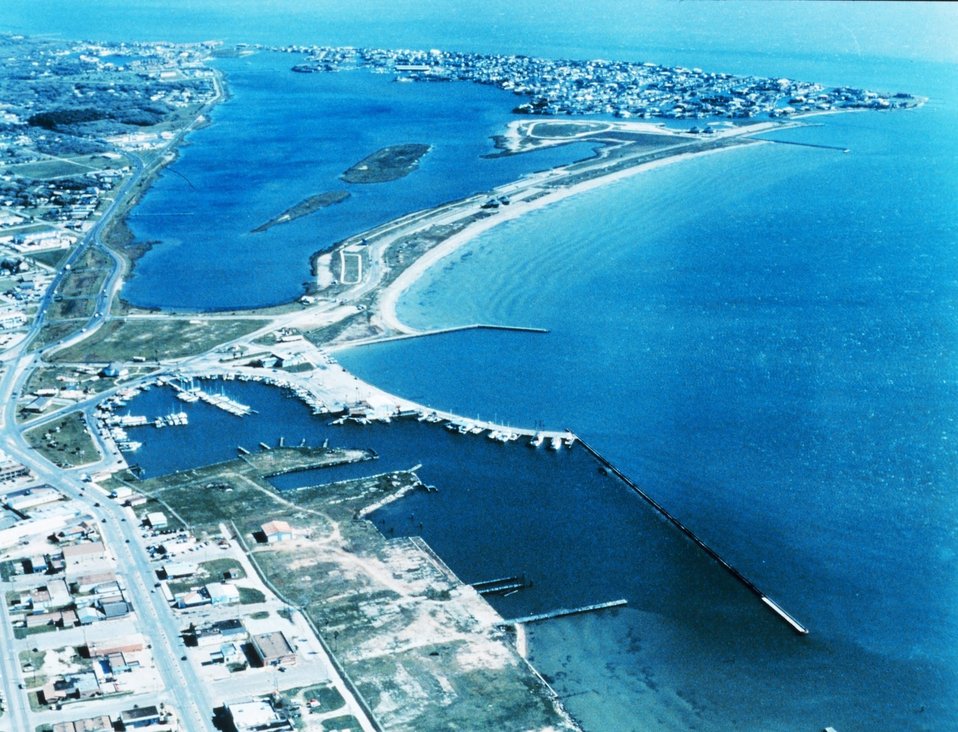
2801 North Latitude 9703 West Longitude.